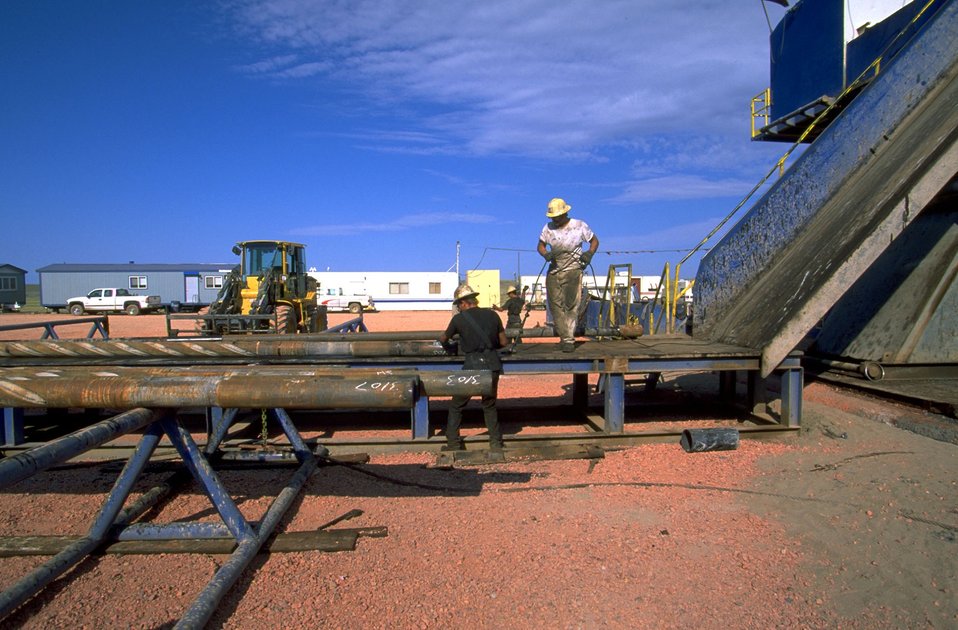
Drill pipe on racks of drilling rig--with workers